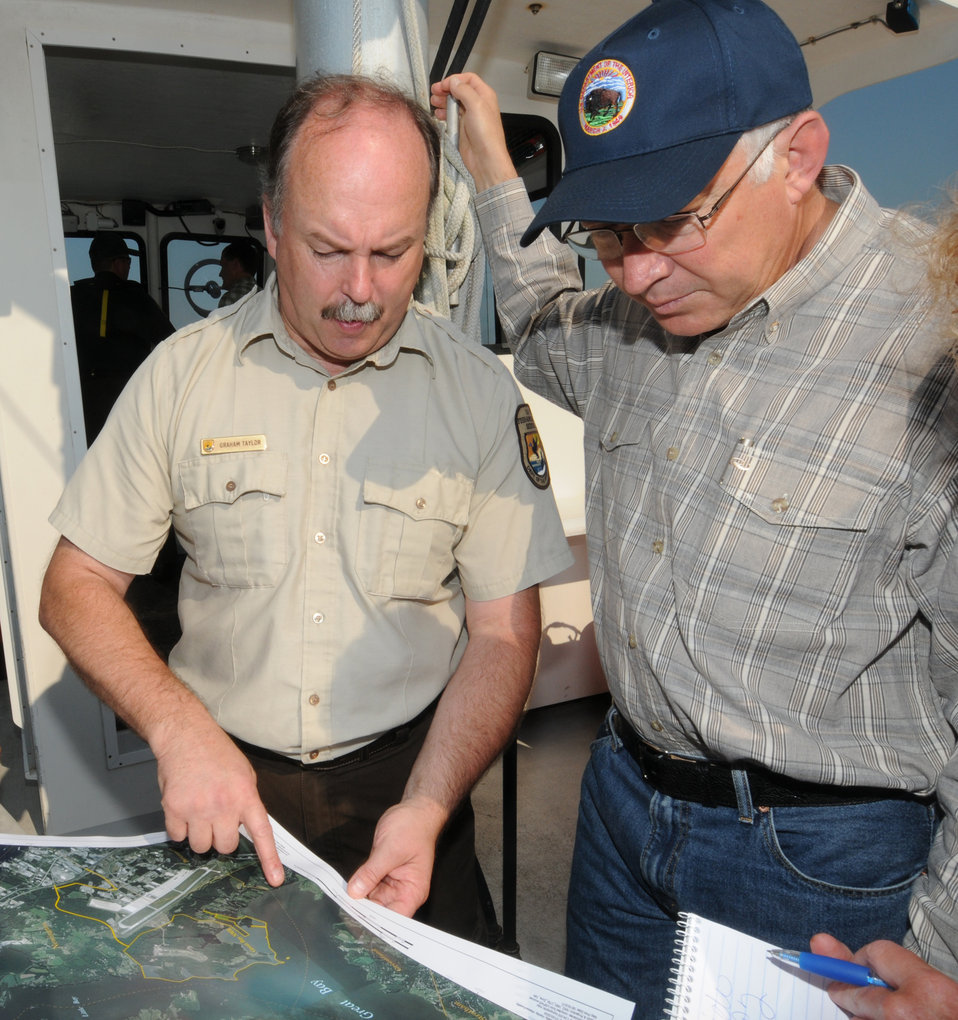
Secretary Salazar visit to Great Bay

Secretary of the Interior Ken Salazar (right) with Graham Taylor, Manager of the Great Bay National Wildlife Refuge. Friday, August 19th, 2011.